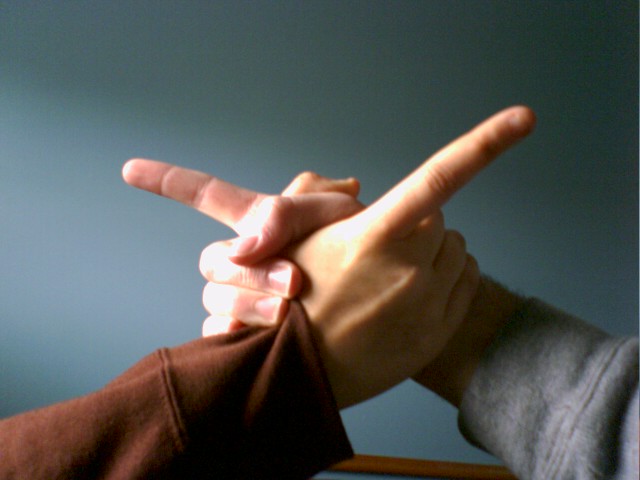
Poniatowicz1224's picture of an example of a finger jousting stance.
This picture was taken with the use of Poniatowicz1224 and Manderinxorange's perfect hand-model-esque hands.

(Mander's hand front, Poniatowicz's hand, back.)